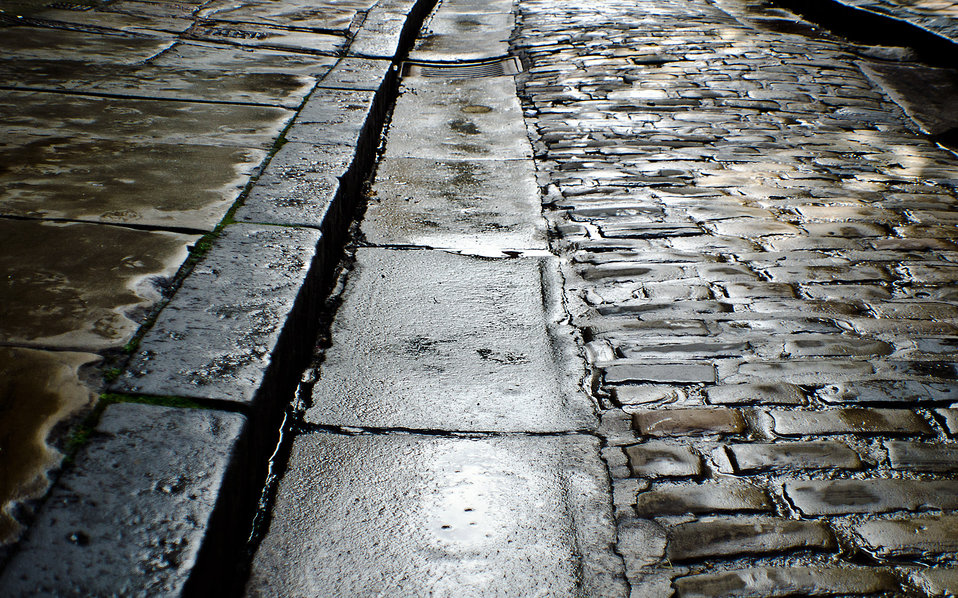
Stone road.